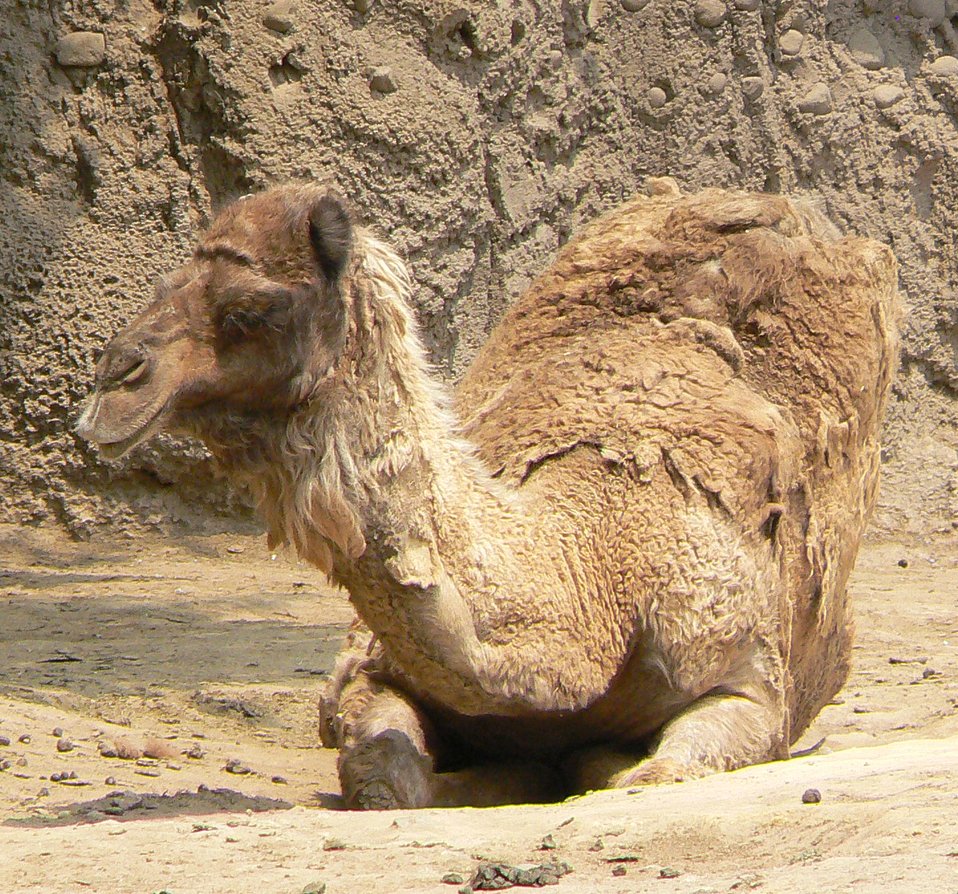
Camelus dromedarius in mexico city zoo